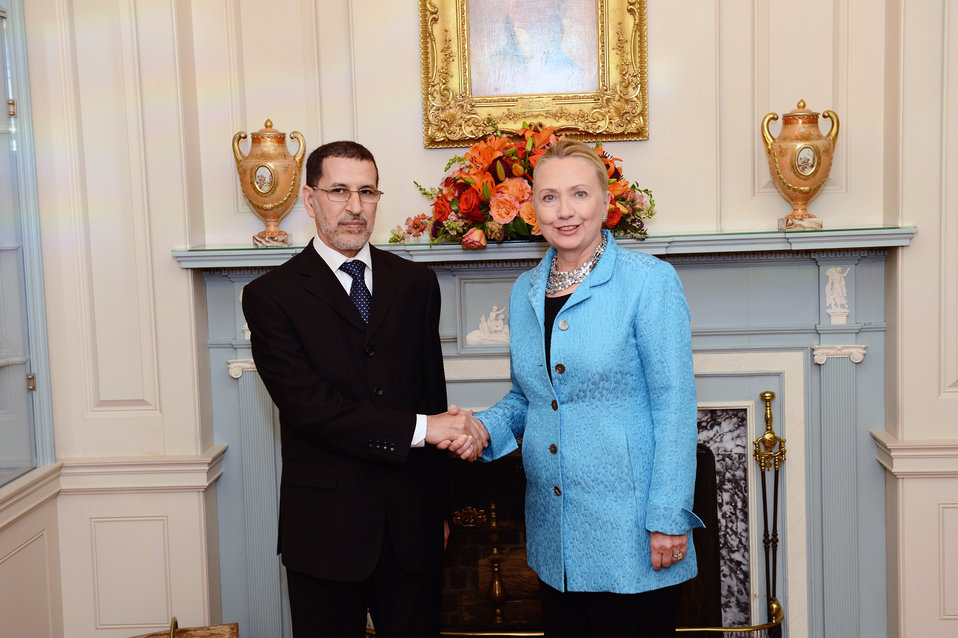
Secretary Clinton Meets With Moroccan Foreign Minister Al-Othmani

U.S. Secretary of State Hillary Rodham Clinton meets with Moroccan Foreign Minister Saad-Eddine Al-Othmani at the U.S.-Morocco Strategic Dialogue at the U.S. Department of State in Washington, D.C. on September 13, 2012.